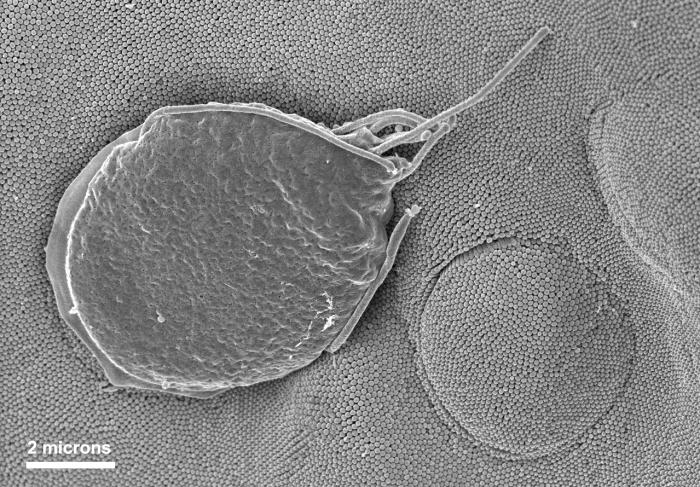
This scanning electron micrograph (SEM) depicted a Giardia muris protozoan adhering itself to the microvillous border of an intestinal epithelial cell. Each small circular profile under the protozoan represents the rounded tip of a single microvillous, and it is estimated that 2000 to 3000 microvilli cover the surface of a single intestinal epithelial cell. The two circular lesions on the right side of the photograph are impressions made by the ventral adhesive disk of other G. muris organisms. This disk acts like a suction cup, facilitating the organism's attachment to the intestinal surface.